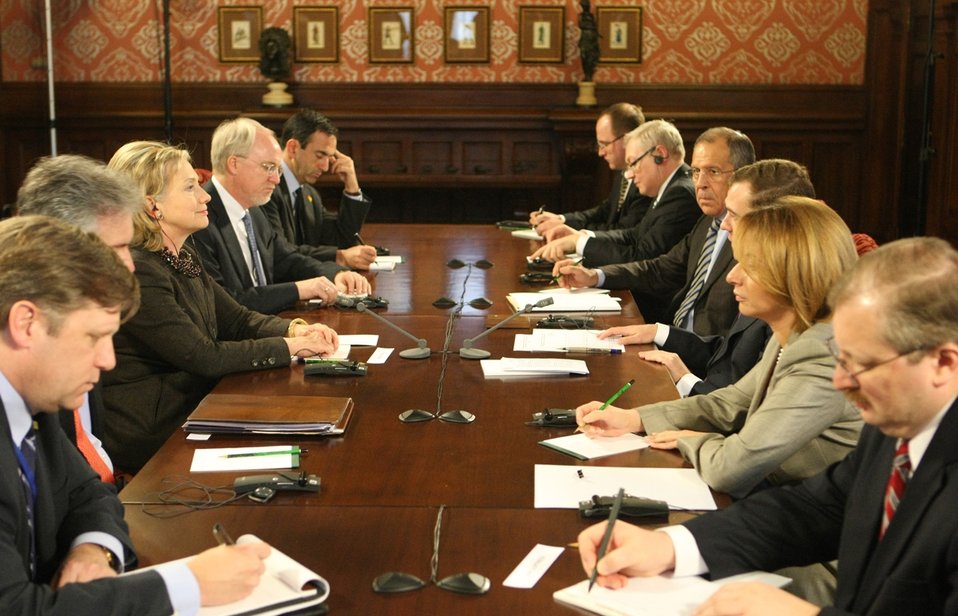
Secretary Clinton With Russian President Medvedev

U.S. Secretary of State Hillary Rodham Clinton, Ambassador Beyrle, and Assistant Secretary Philip Gordon meet President Medvedev during a meeting at the Barvikha residence outside Moscow, March 19, 2010.